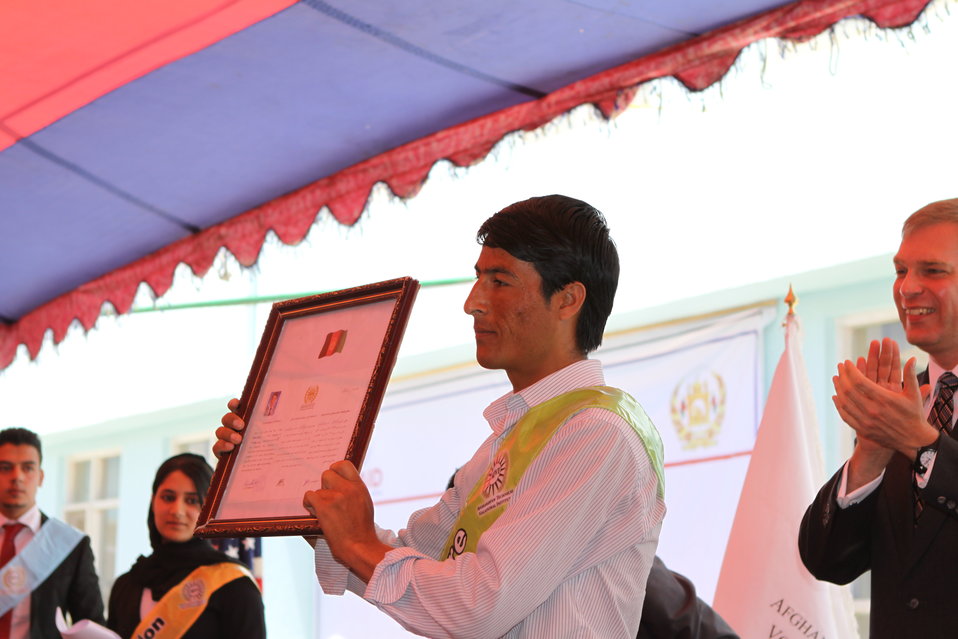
100522 ATVI Graduation 120